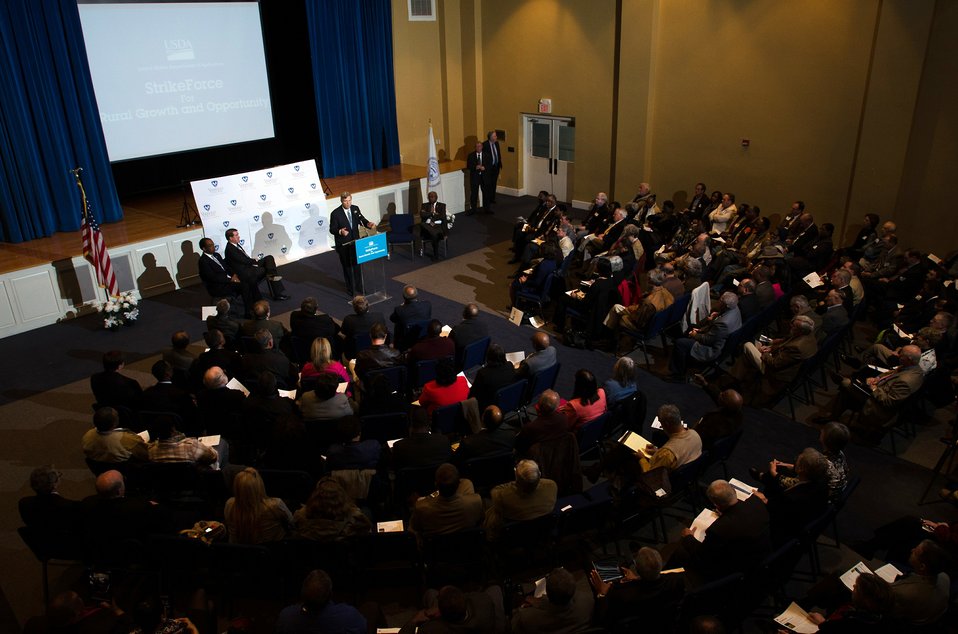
Agriculture Secretary Tom Vilsack speaks at the U.S. Department of Agriculture's (USDA) Strike Force for Rural Growth and Opportunity event held at Voorhees College in Denmark, SC, on Tuesday, March 26, 2013. The primary goal of the Strike Force initiative is to increase partnership with rural communities and leverage community resources in targeted, persistent poverty areas. Vilsack noted that through the Strike Force initiative, USDA will do more to partner with local and state governments and community organizations on projects that promote economic development and job creation.